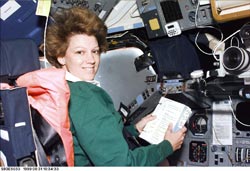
Colonel Eileen M. Collins

1990's -- Col. Eileen M. Collins commands the STS-93 mission.